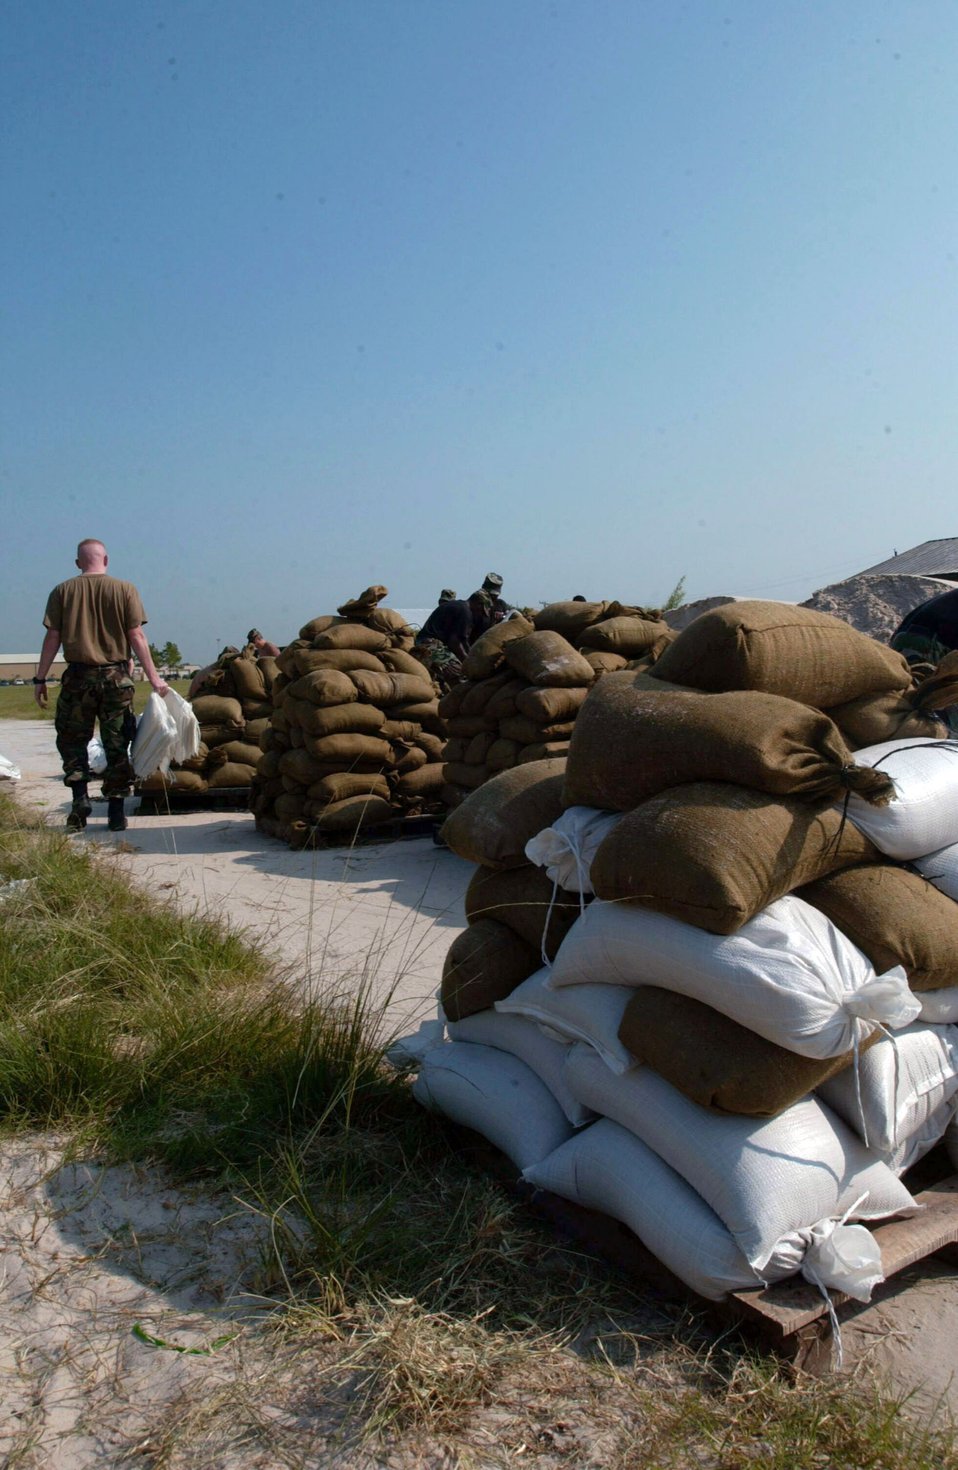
Preparing for the storm

ELLINGTON FIELD, Texas -- Sandbags filled by Airmen with the 147th Fighter Wing here lie ready to be used to protect buildings from flooding that Hurricane Rita is projected to bring. Rita is the third worst hurricane in recorded history and is expected to make landfall Sept. 24. Ellington Field is 17 miles southeast of Houston.